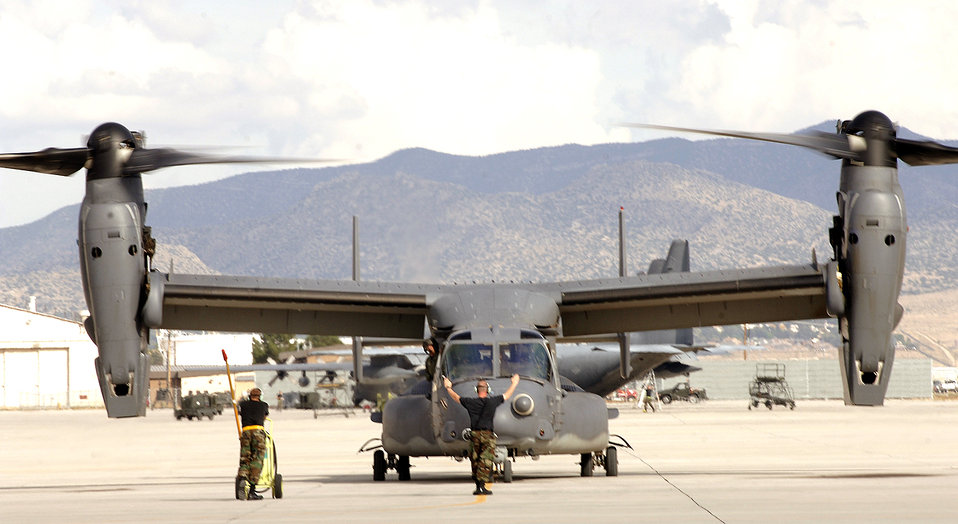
Pilots thrilled by CV-22 capabilities

A CV-22 Osprey lands at Kirtland Air Force Base, N.M., Oct. 5 after flying an air-refueling mission. This versatile, self-deployable aircraft offers increased speed and range over other rotary-wing aircraft and can perform missions that normally would require both fixed-wing and rotary-wing aircraft.